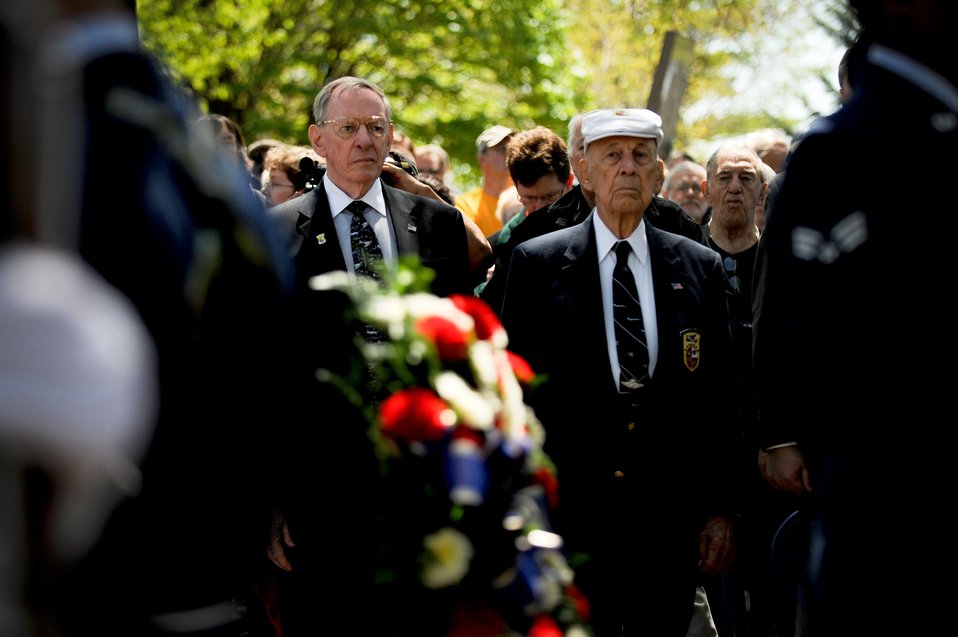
Doolittle Raiders Memorial Service

Maj. Gen. (ret.) Charles D. Metcalf, director of the National Museum of the United States Air Force, and Lt. Col (Ret.) Richard E. Cole, co-pilot of the first B-25 Mitchell Bomber that took part in the Doolittle Tokyo Raid, stand during the opening flag ceremony at a memorial service held in honor of the Doolittle Tokyo Raiders during their 68th reunion held at the National Museum of the United States Air Force, Wright-Patterson Air Force Base, Ohio, April 18th, 2010. The Doolittle Raiders' 68th reunion commemorates the anniversary of the Doolittle Tokyo Raid on April 18th, 1942, when U.S. Army Air Forces Lt. Col. Jimmy Doolittle's squad of 16 B-25s bombed targets in response to the Japanese attack on Pearl Harbor.